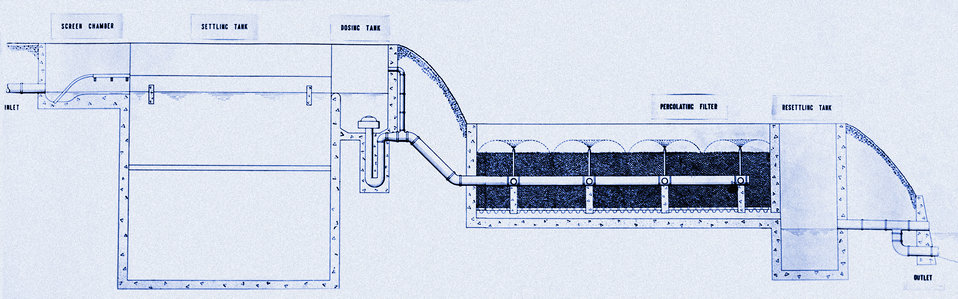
This historic 1923 diagrammatic layout of the percolating filter servicing a Minnesotan municipal treatment plant, revealed its filter components, which included the bar screen, preliminary and final settling tanks, dosing siphon, and trickling filter.